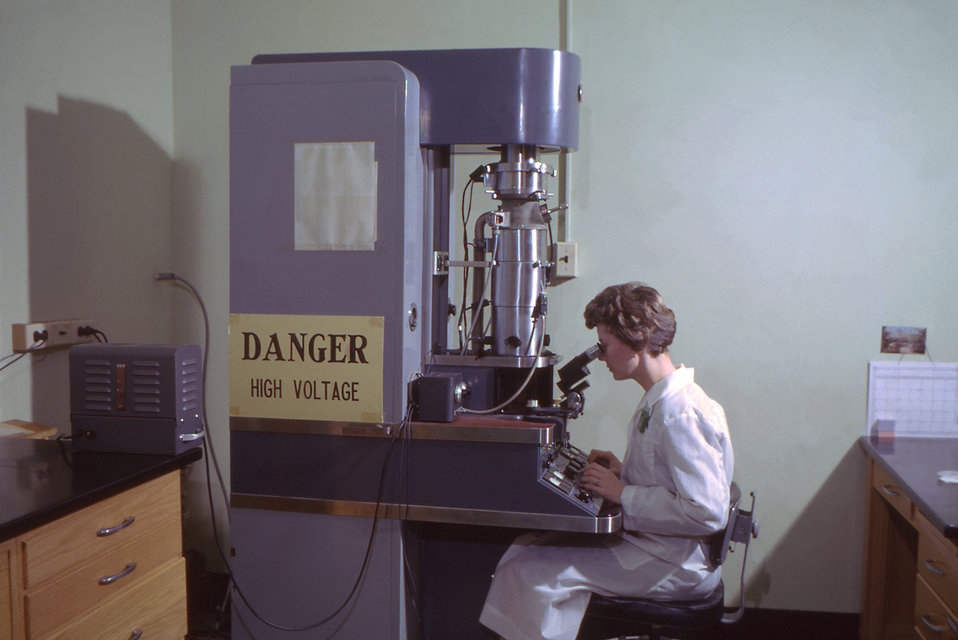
This historic 1962 image depicts a former CDC electron microscopist seated at one of the first transmission electron microscopes (TEM) used at the organization's headquarters located on its Roybal campus, in metropolitan Atlanta, Georgia.